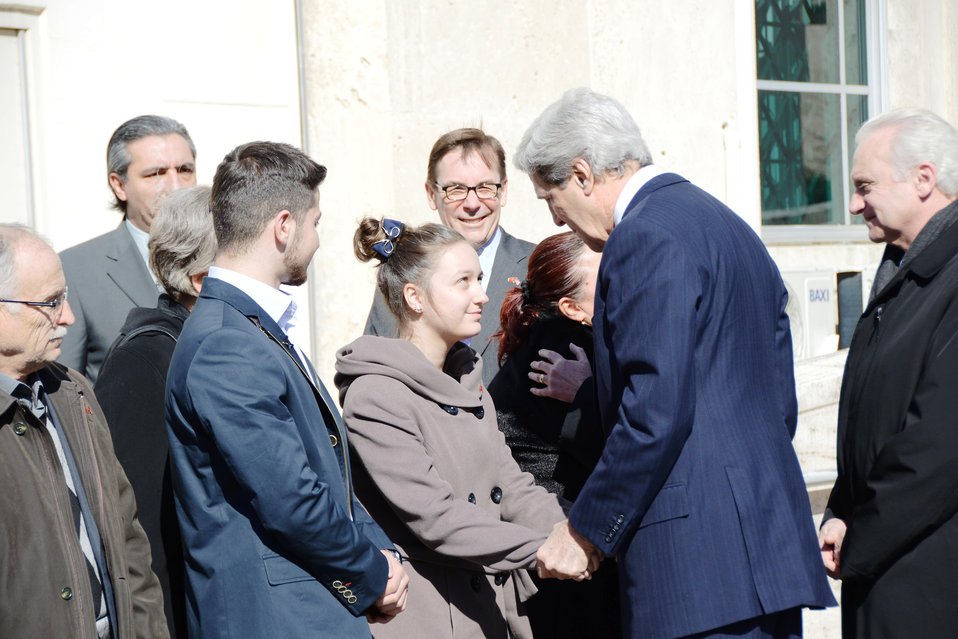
Secretary Kerry Shakes Hands With a Family Member of Embassy Guard Akarsu

U.S. Secretary of State John Kerry shakes hands with a family member of slain Embassy guard Mustafa Akarsu at a Memorial Ceremony at the U.S. Embassy in Ankara, Turkey, on March 1, 2013.